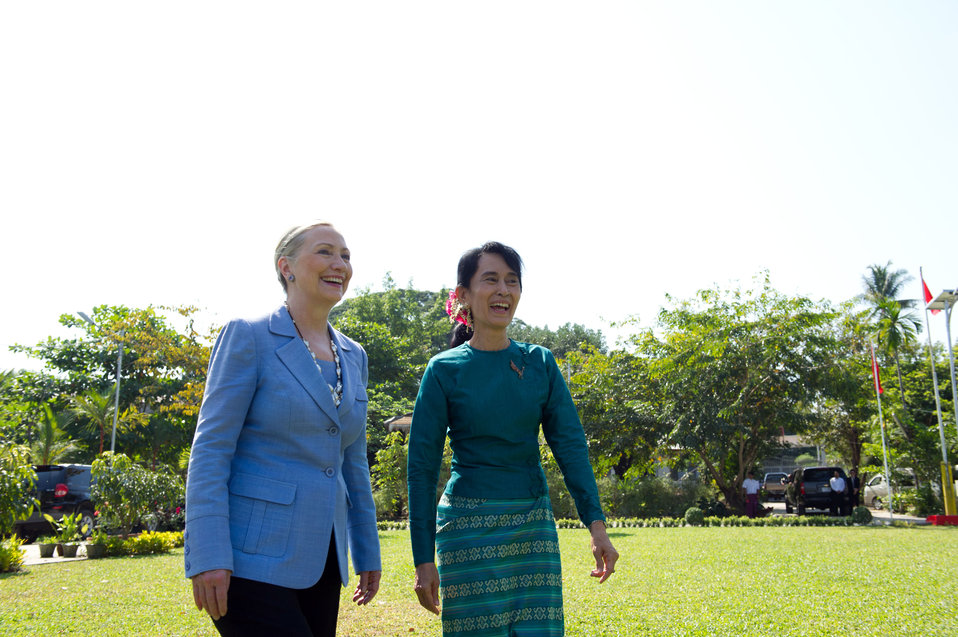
Secretary Clinton Meets With Daw Aung San Suu Kyi

U.S. Secretary of State Hillary Rodham Clinton visits Daw Aung San Suu Kyi at her house in Rangoon, Burma, on December 2, 2011.